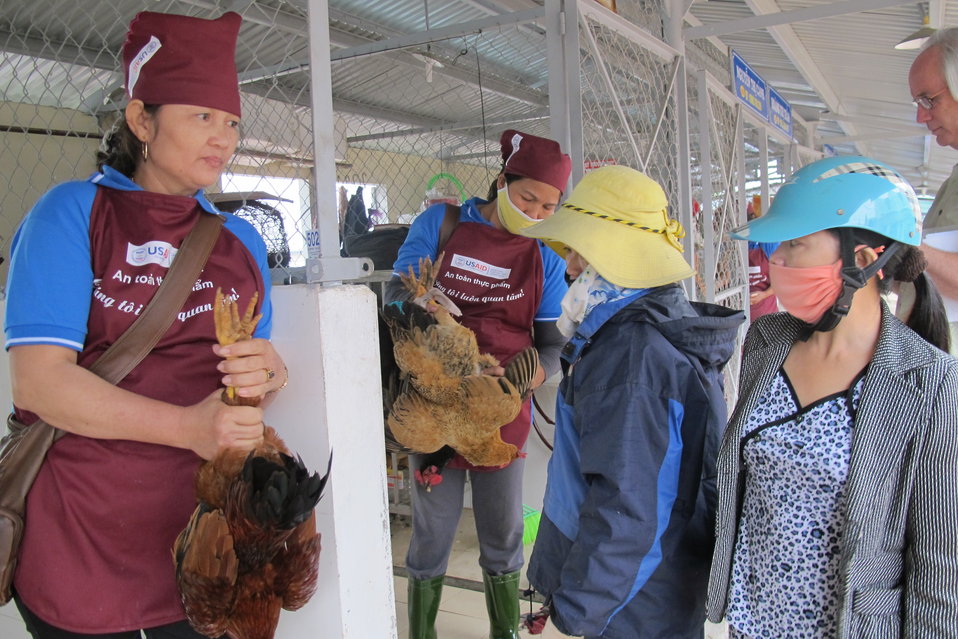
Hygiene and Sanitation at Dong Ha Poultry Market